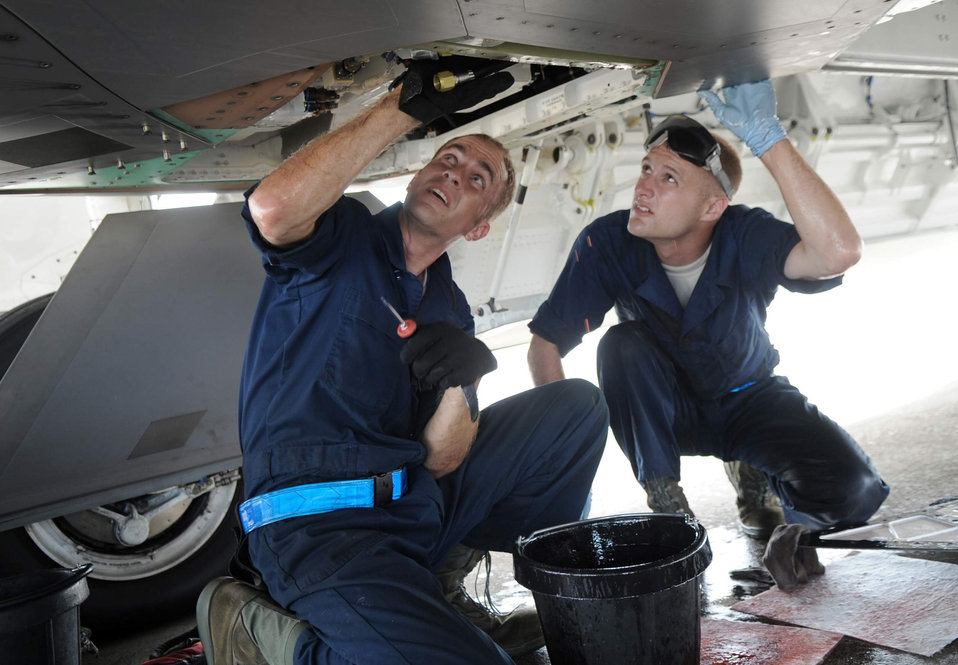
Maintainers keep F-22s ready in Guam

Staff Sgt. Jeremiah Smith and Senior Airman Theodore Cupp, F-22 crew chiefs from the 525th Expeditionary Aircraft Maintenance Unit deployed from Elmendorf Air Force Base, Alaska, perform maintenance on a hydraulic pump June 3. The Airmen are deployed to Andersen Air Force Base, Guam in support of U.S. Pacific Command's Theatre Security Packages.